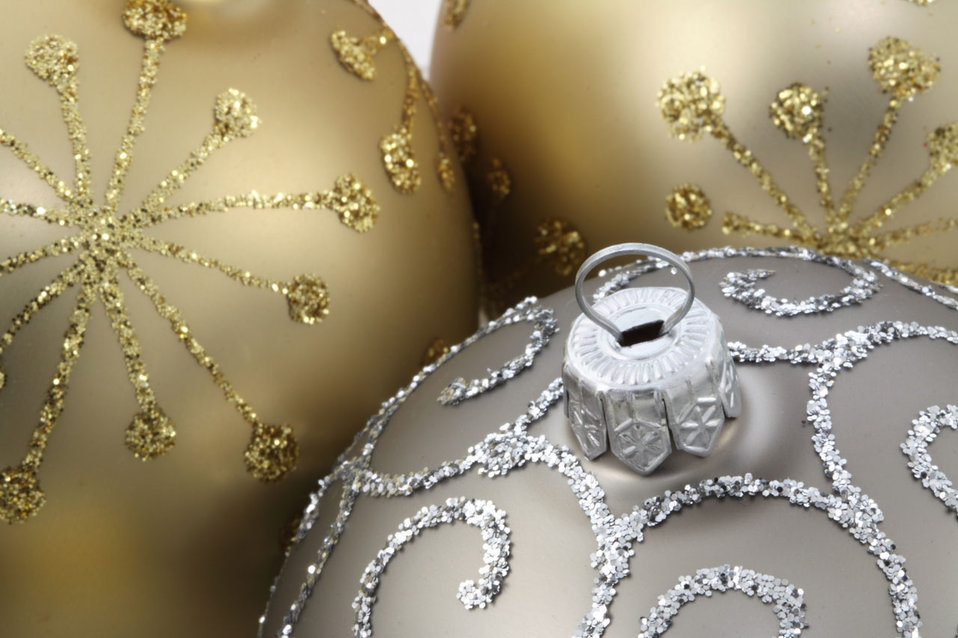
Golden baubles

Two golden christmas baubles with one silver one..